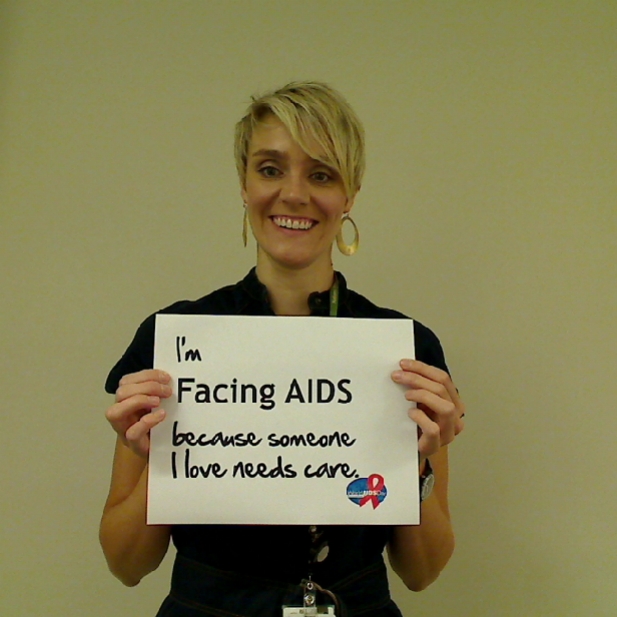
I'm Facing AIDS because someone I love needs care.